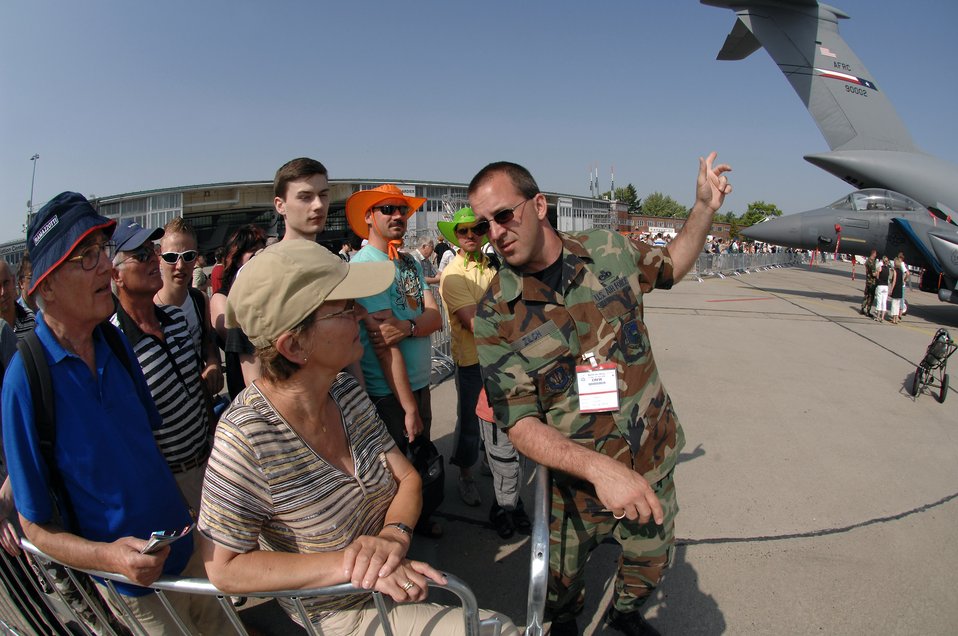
USAFE Airmen beat the heat, manage air show crowd

Master Sgt. John Zilch answers questions from airshow guests while they wait to tour the U.S. corral during the 2008 Berlin Airshow. U.S. participation in the Berlin Airshow enhances the U.S.-German military-to-military relationship, supports security cooperation strategic direction efforts and fosters good relations and better understanding among nations. Sergeant Zilch is from the 493rd Aircraft Maintenance Unit at Royal Air Force Lakenheath, U.K.